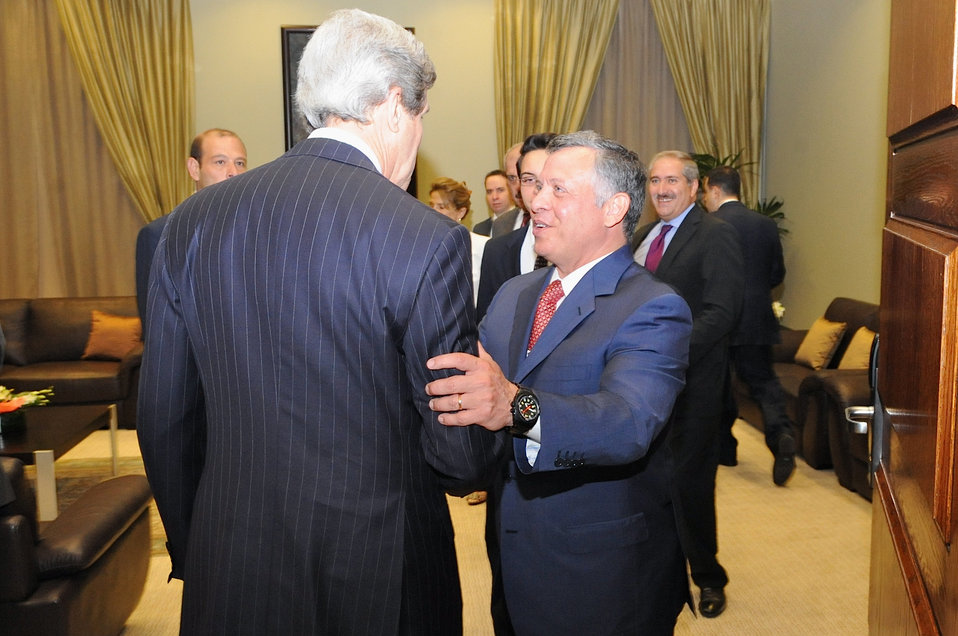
Secretary Kerry Meets With King Abdullah II Before World Economic Forum in Jordan

U.S. Secretary of State John Kerry, accompanied by U.S. Ambassador to Jordan Stuart E. Jones, meets with King Abdullah II ibn Al-Hussein before a session of the World Economic Forum in Dead Sea, Jordan, on May 26, 2013.